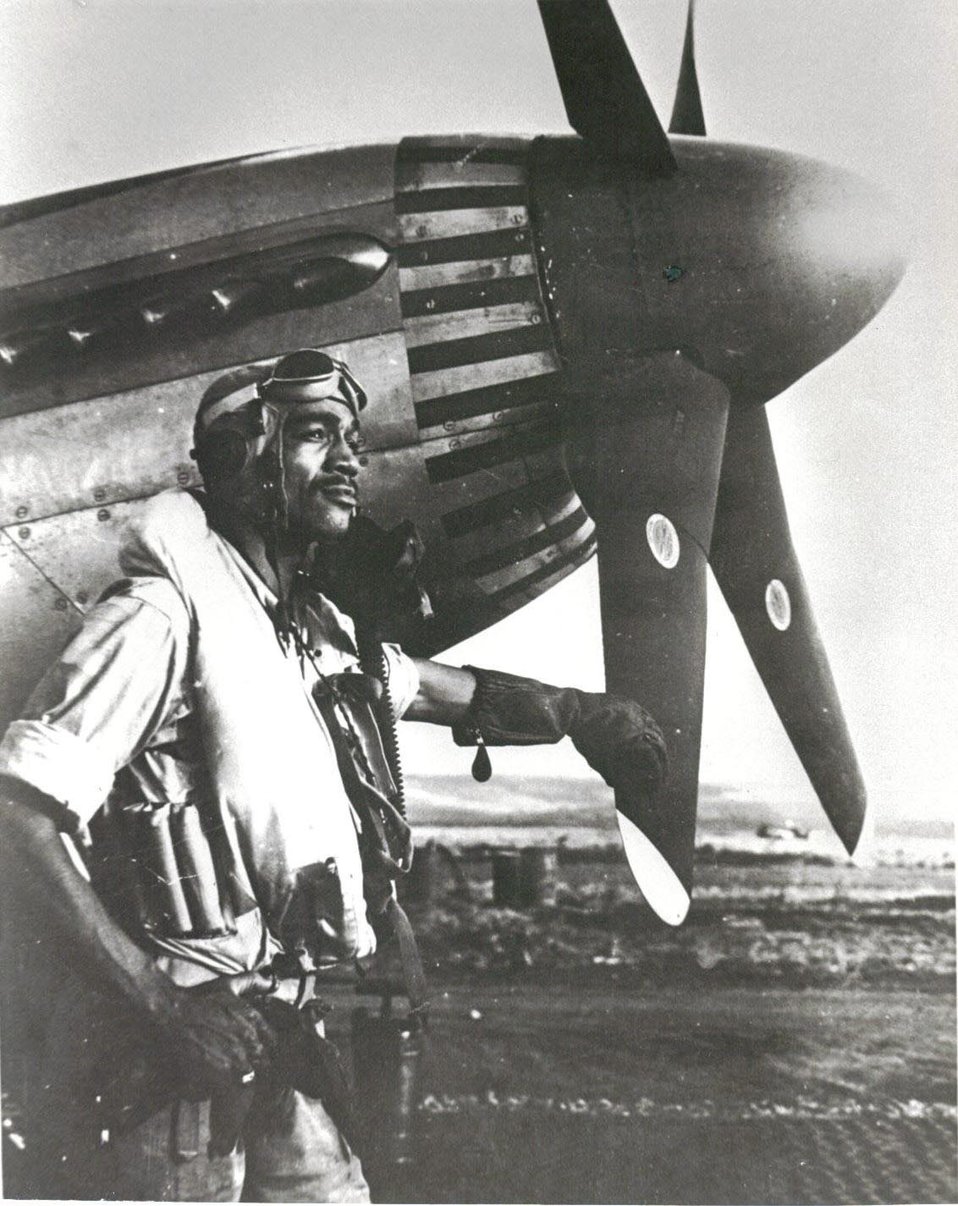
Lee Archer: Tuskegee Airman

Lt.Col. Lee Archer: Tuskegee Airman. He and his unit were brought to life in the George Lucas film